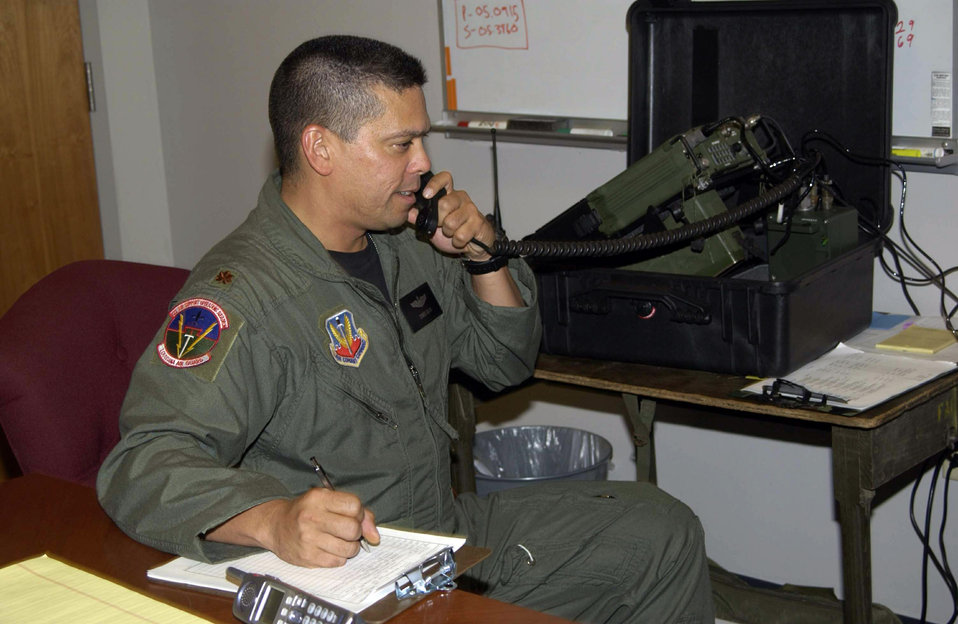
Airmen help on 'front lines' in New Orleans

CAMP BEAUREGARD, La. - Airmen from the 122nd Air Support Operations Squadron here are helping coordinate Hurricane Katrina relief efforts in New Orleans. Maj. Chris Gavin is operating a satellite radio from a command center communicating with tactical air controllers who are assisting various agencies provide help where it is needed. Maj. Gavin is a squadron air liaison officer here.